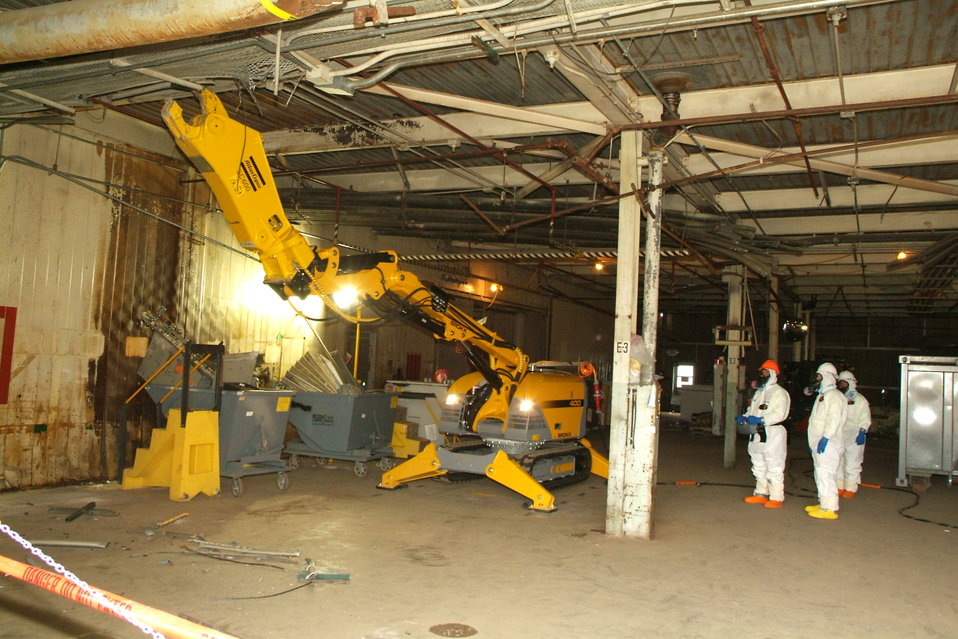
Recovery Act Workers Use Robotics at Paducah Site Cleanup

Heavy equipment operators gain hands-on training using a robotic demolition machine in the C-340 shipping and receiving area.